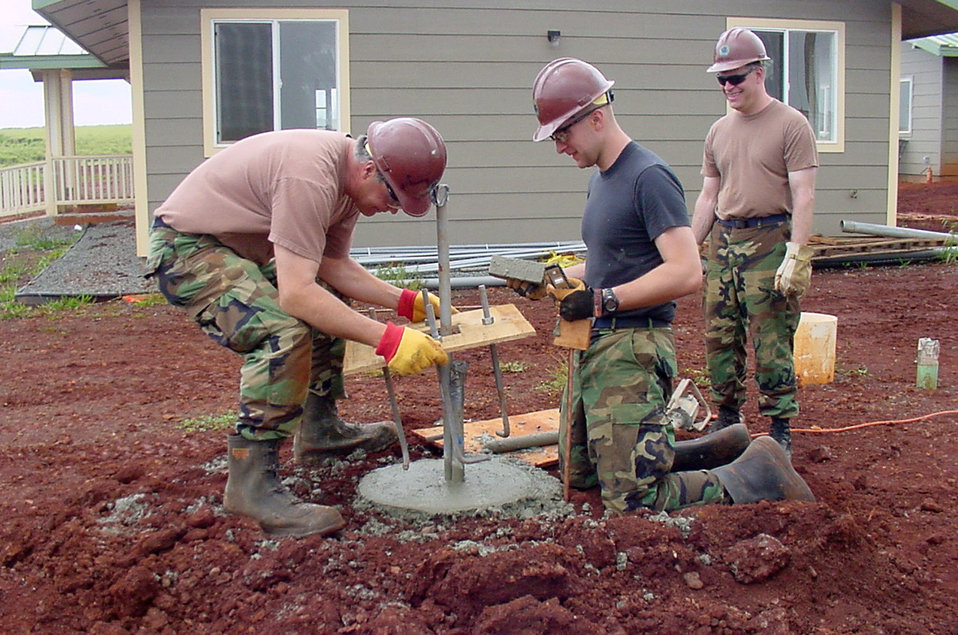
Civil engineers assist in humanitarian mission

Senior Airman Christopher Schlembach assists Master Sgt. Joseph Brown in setting anchor bolts for street lights while Tech. Sgt. William Dragolovich supervises in Oahu, Hawaii. All three reservists are assigned to the 440th Civil Engineer Squadron. Forty-four reservists from the 440th Airlift Wing deployed on the humanitarian mission to Hawaii.